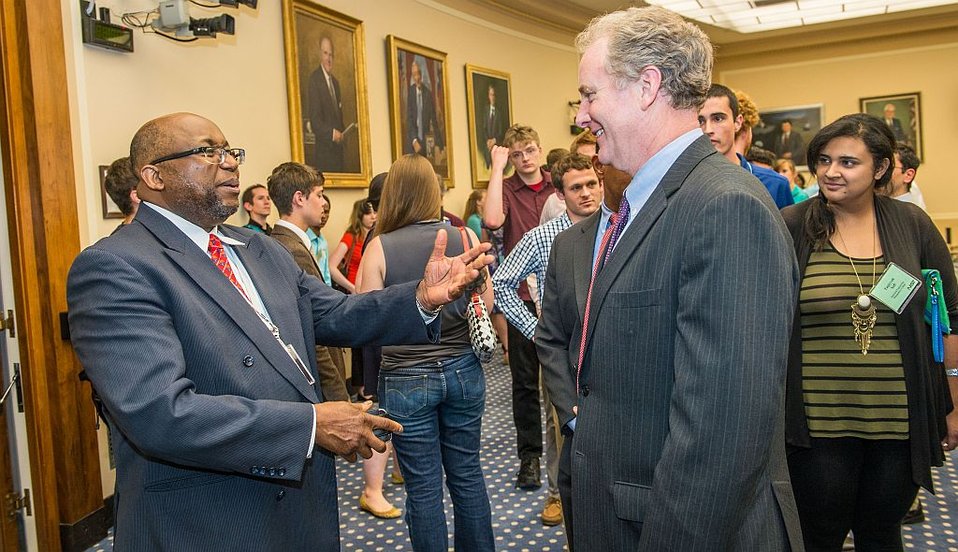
NIST Deputy Director May and Congressman Van Hollen

NIST Deputy Director Dr. Willie May (left) welcomes Congressman Chris Van Hollen, Dem. Maryland, to Student Undergraduate Research Fellow (SURF) Day on the Hill as SURF students mingle in the House Science Committee Hearing Room.